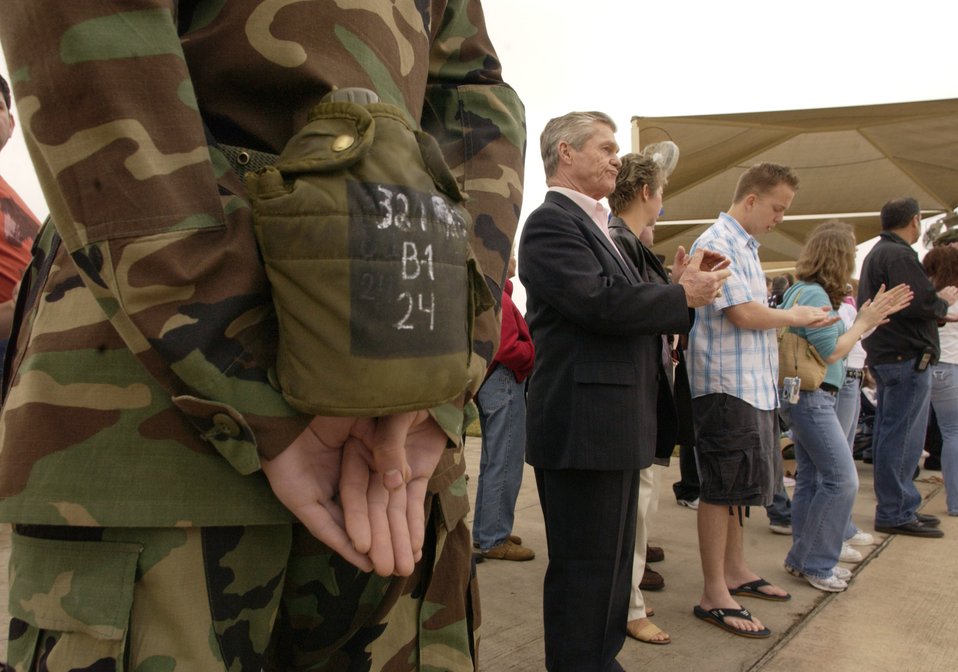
Graduation day

LACKLAND AIR FORCE BASE, Texas (AFPN) -- Basic Trainee Adam Cohn helps control the audience of family and friends who witnessed the graduation of 961 of the Air Force's newest Airmen at the final basic military training graduation of 2005. Trainee Cohn is from Albany, N. Y., and in his third week of training.